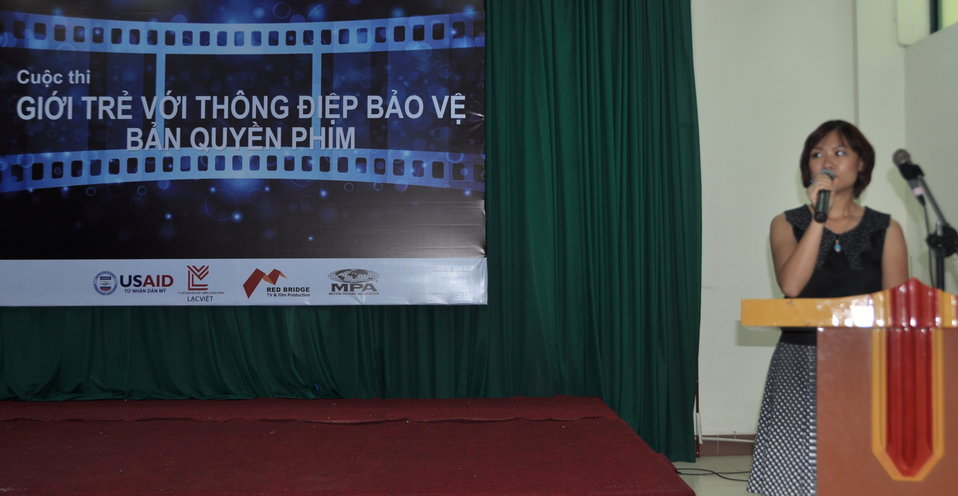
USAID supports scriptwriting contest for students in Hanoi to boost intellectual property rights awareness